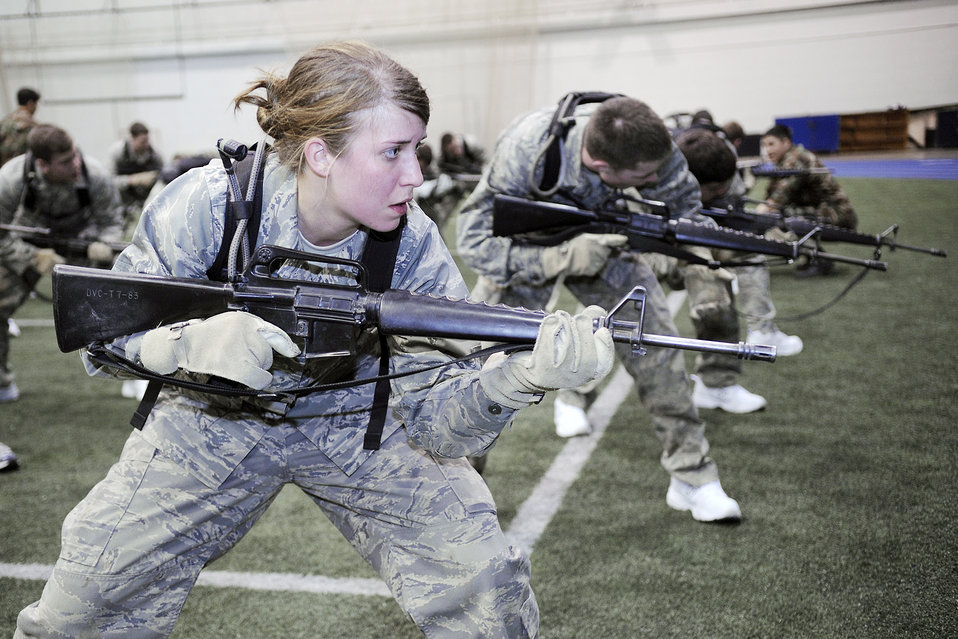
Academy freshmen attain status

Freshman Ava Tamosuinas of cadet squadron 19 participates in the assault course during Recognition events at the U.S. Air Force Academy, Colo., March 12, 2010. Recognition consists of several days of mentally and physically demanding activities, and culminates with the ascension of the freshmen into the ranks of upper class cadets.